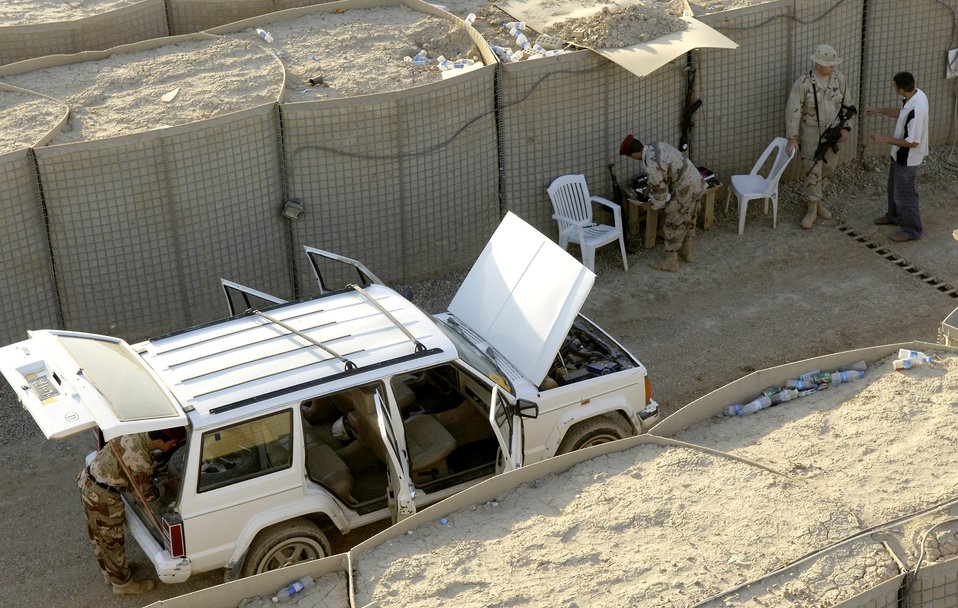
Airmen train Iraqi soldiers on base defense

First Lt. Frank Bigelow watches as a vehicle is inspected by Iraqi soldiers before being cleared to enter the Ar Rasheed Base, Iraq, on Friday, May 26, 2006. More than 250 Iraqi soldiers make up the Iraqi base defense unit. Each soldier is trained and advised by five security forces Airmen and their Army commander who live and work on the base. Lieutenant Bigelow is the assistant team chief of Base Defense Unit Team 3602.